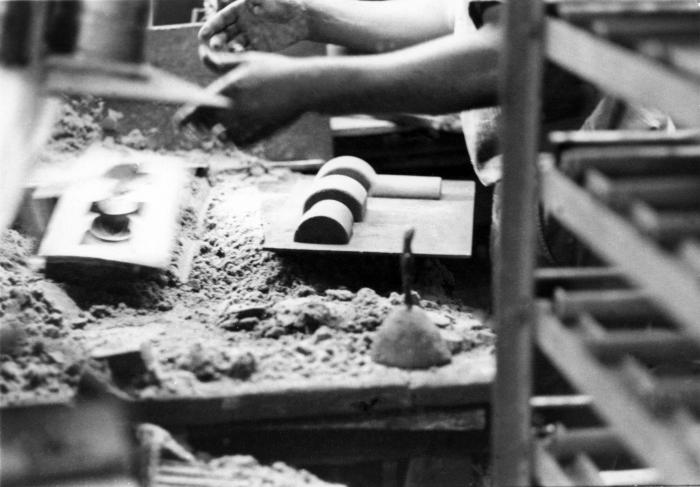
Thought to be from the 1970s, this historic image was provided by the Center for Disease Control's (CDC), National Institute for Occupational Safety and Health (NIOSH). The photograph depicted the hands of an inductrial worker who was in the process of making sand molds. It appeared that the worker was about to rinse of his hands and arms in a nearby sink. Note the accumulations of sand in the work zone. Hopefully, this person was wearing protective devices such as a filtered breathing mask, and if necessary, eyewear to protect his eyes from flying particulates.In gaining a better understanding of workplace hazards, through hands-on and on-site information acquisition, protocol-formulating bodies such as NIOSH, are better able to create a safer workplace through substantiation of appropriate safety regulations.